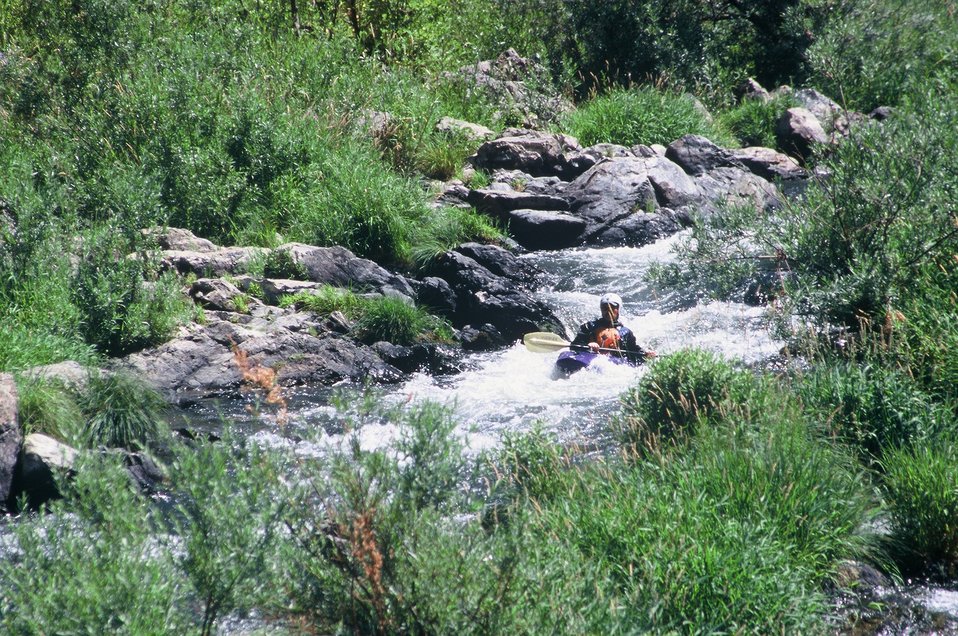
Rainie Falls Fish Ladder